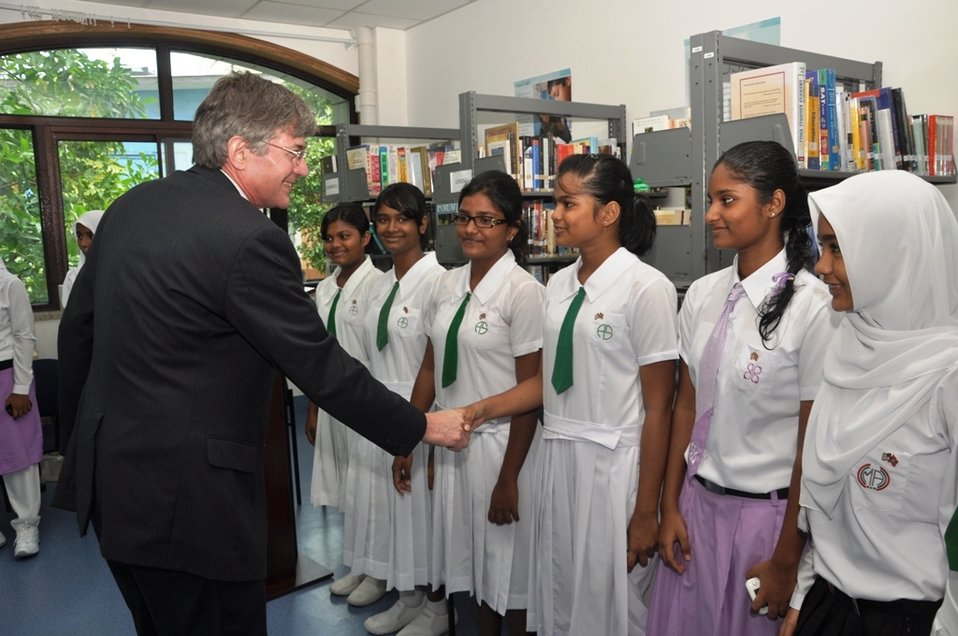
Deputy Secretary Steinberg Shakes Hands With a Maldivian Girls Soccer Team

U.S. Deputy Secretary of State James Steinberg shakes hands with a Maldivian girls soccer team that recently visited the United States in Male, Maldives, on January 29, 2011.